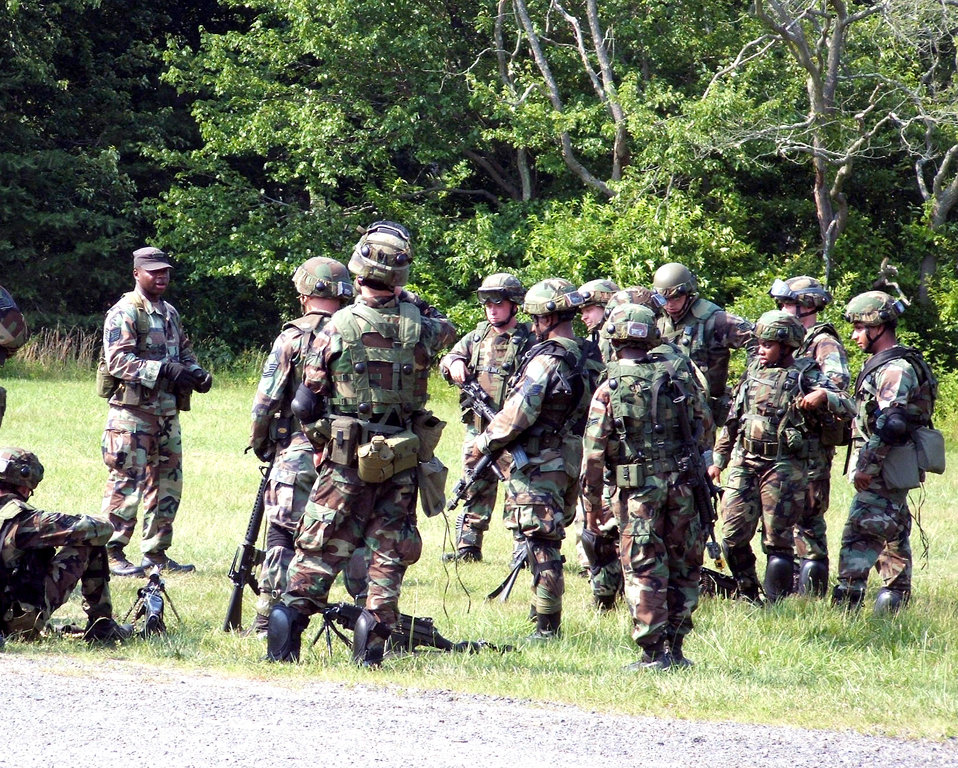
Preparing for deployment

Staff Sgt. Shaylin Butler (left) talks to students about combat patrolling and tactics during a field session at the Air Force Integrated Contingency Skills Training Course 06-4 at Fort Dix, N.J., on Monday, June 19. More than 165 students are participating in the two-week course. Airmen in the training are preparing for deployments. Sergeant Butler is an instructor for the Air Mobility Warfare Center's 421st Combat Training Squadron, which manages the course.